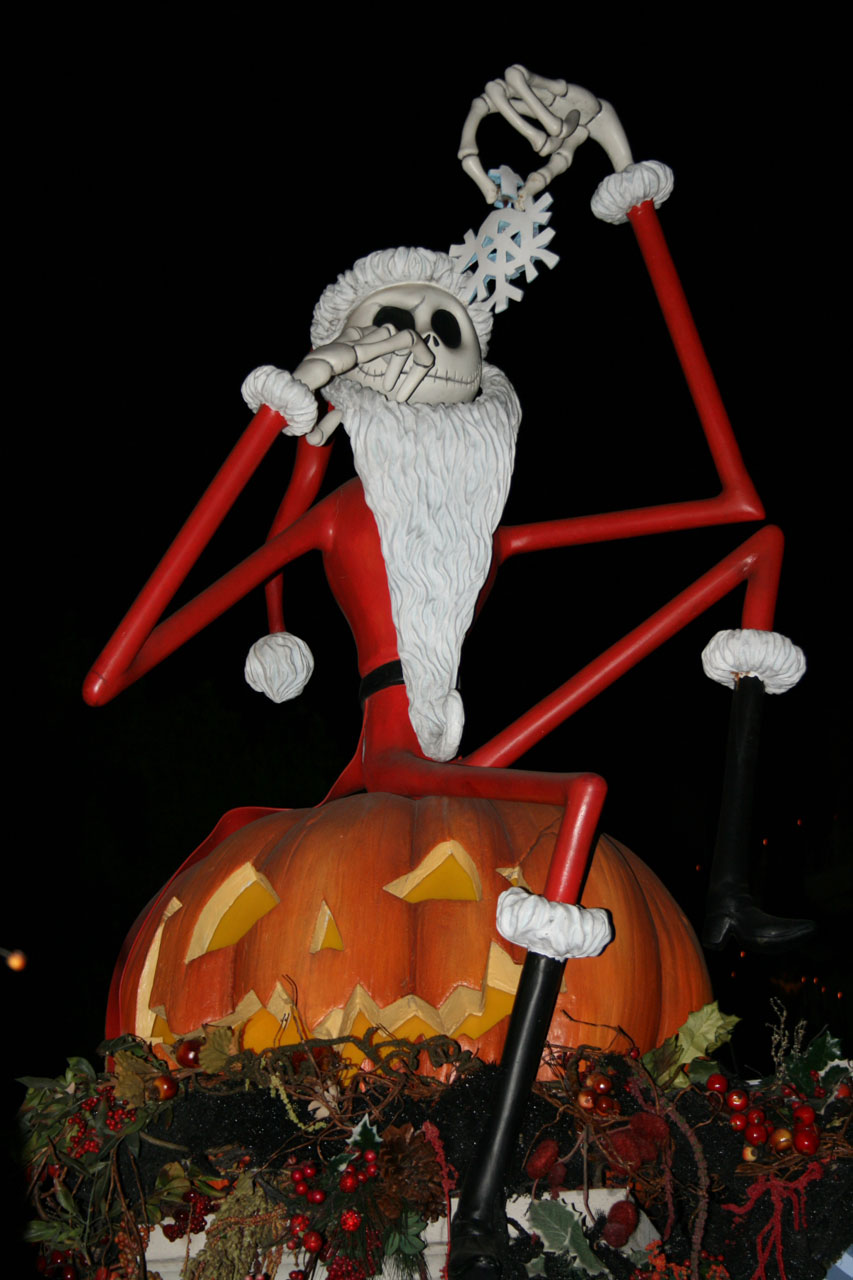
Jack skellington

Entrance to haunted mansion at disneyland with nightmare before christmas character jack skellington.